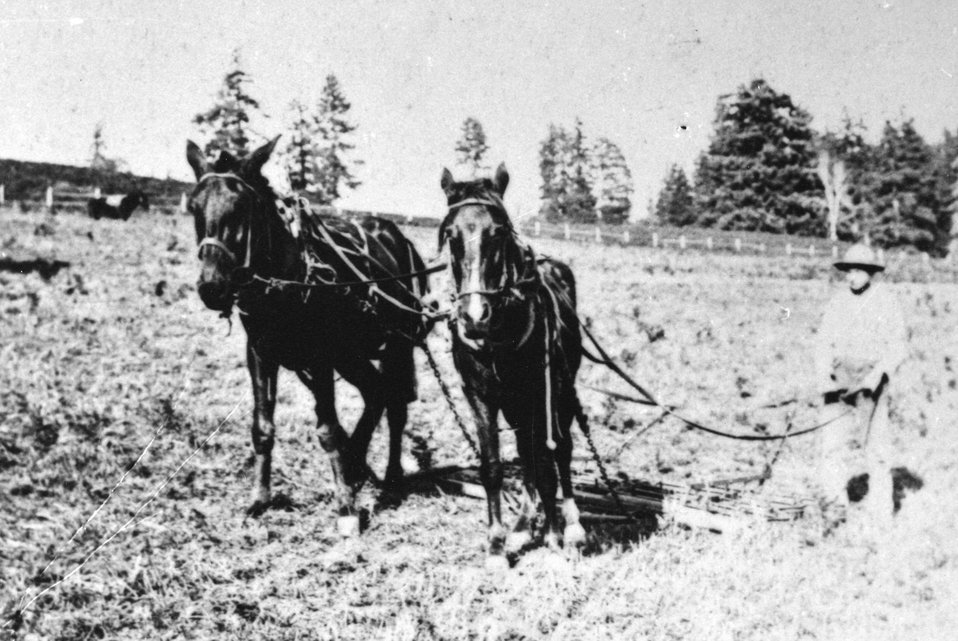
Chauncy Fry Plowing.